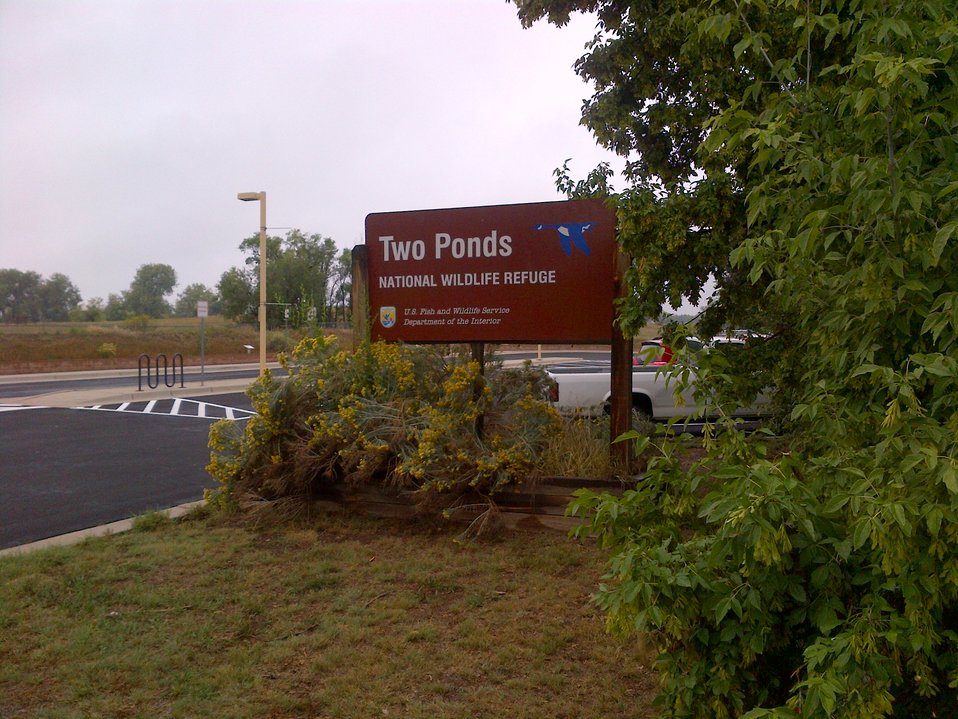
Sign - Street View